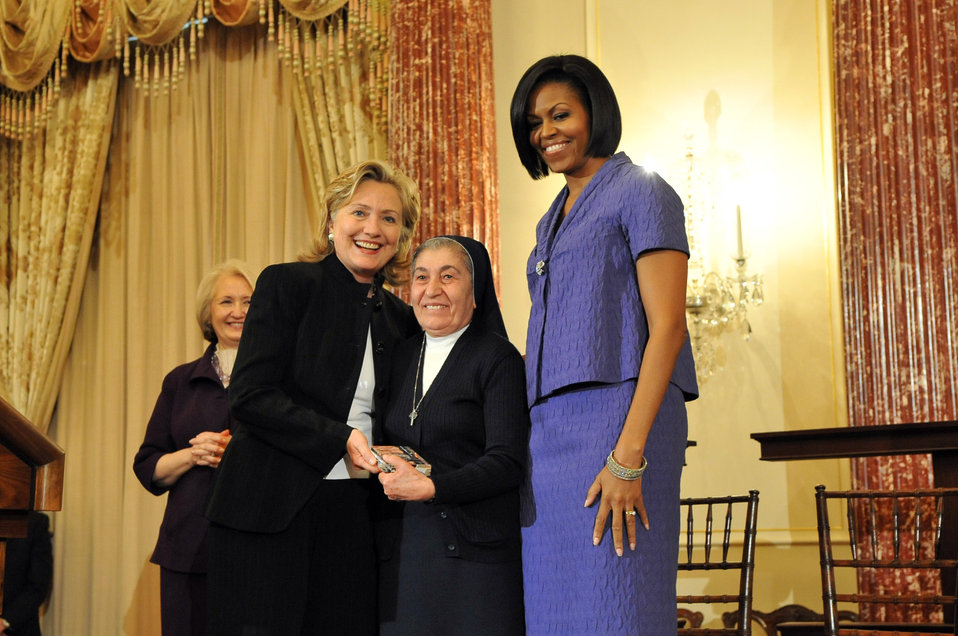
Secretary Clinton With First Lady Michelle Obama and Sister Marie Claude Naddaf of Syria

U.S. Secretary of State Hillary Clinton and First Lady Michelle Obama stand with Honoree Sister Marie Claude Naddaf of Syria at the 2010 International Women of Courage Awards at the U.S. Department of State, Washington, D.C. March 10, 2010.